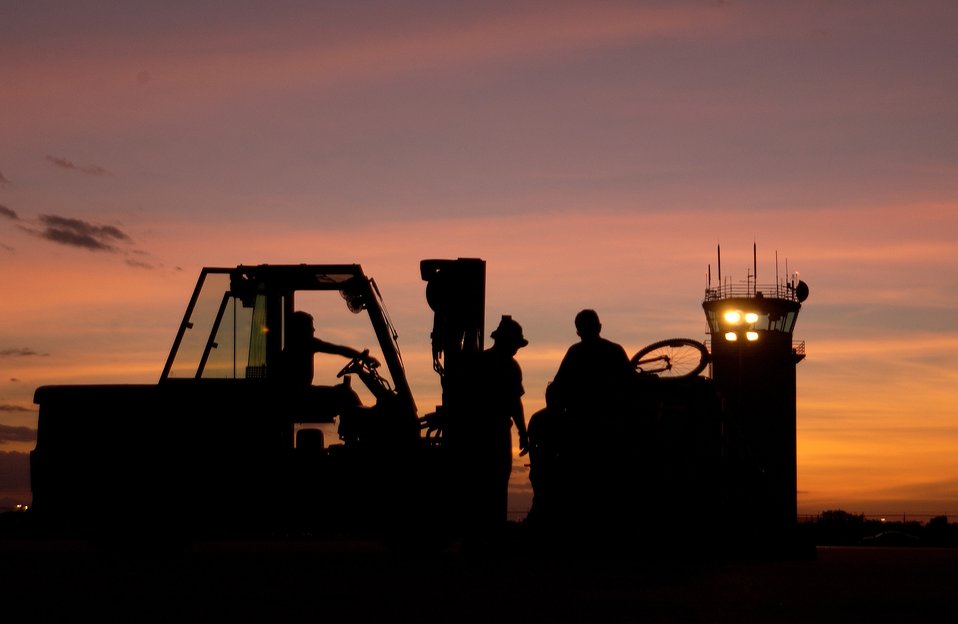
Day's done

ELLINGTON FIELD, Texas -- Members of the Texas Air National Guard's 136th Tanker Airlift Control Element pick up an off loaded pallet of equipment as the sun sets on the flightline here. The Airmen are assigned to Naval Air Station-Joint Reserve Base Fort Worth, Texas.